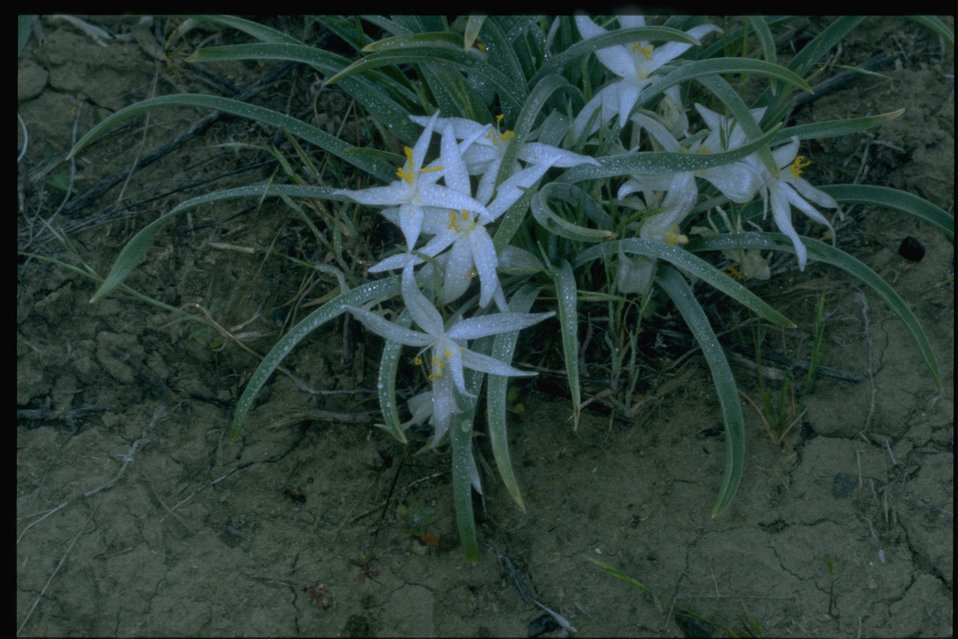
Medium shot of Star Lily; Sand Lily; Mountain Lily (Leucocrinum montanum).